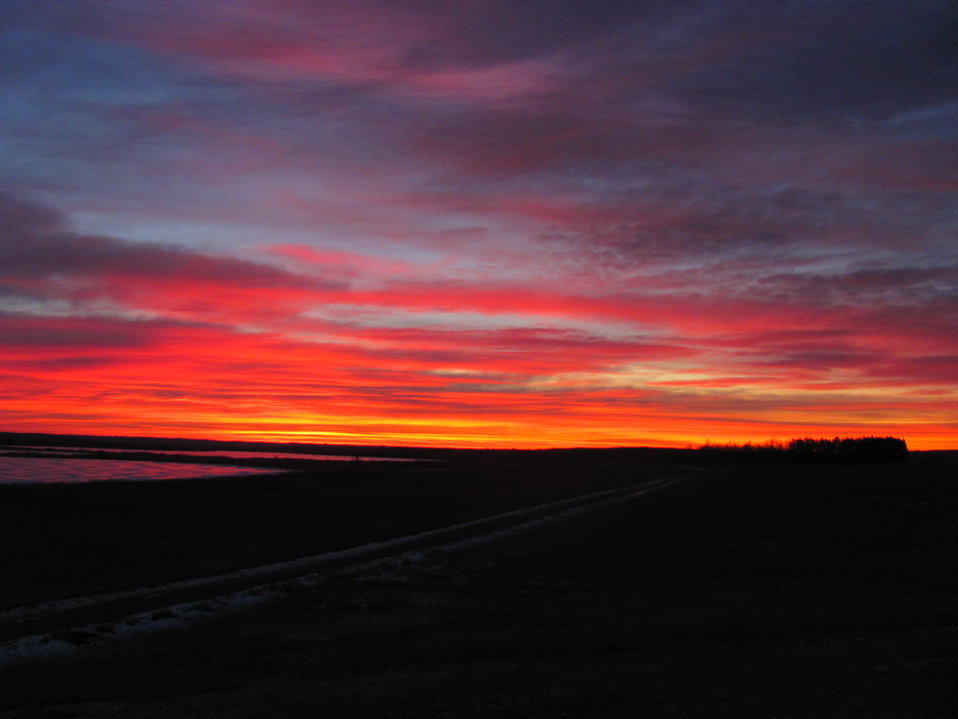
Chase Lake Headquarters Sunrise

This is a lovely sunrise, as seen from along the autotour trail within Chase Lake Headquarters.